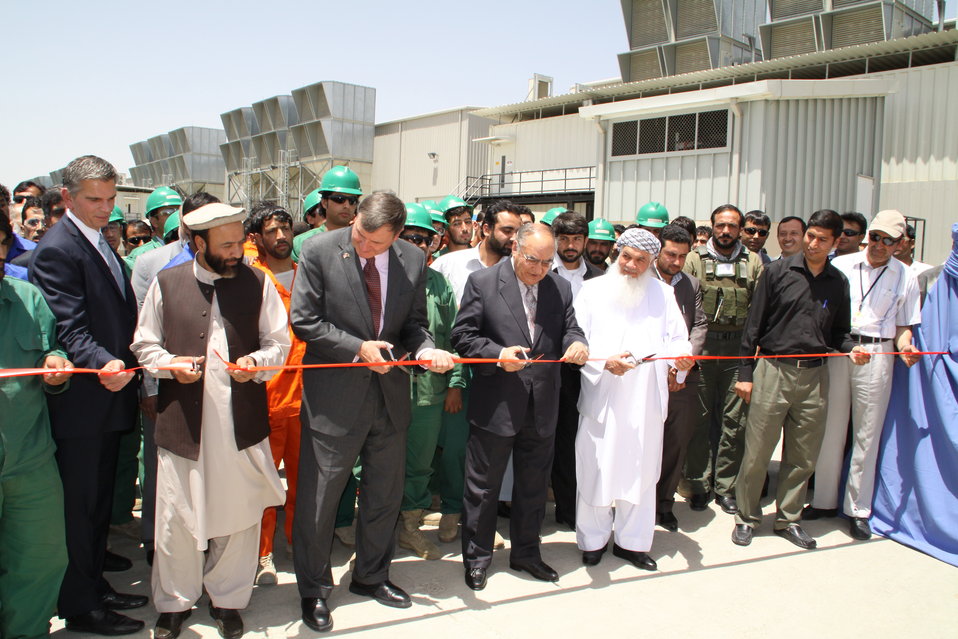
فابریکه برق طره خیل به حکومت افغانستان تسلیم داده شد